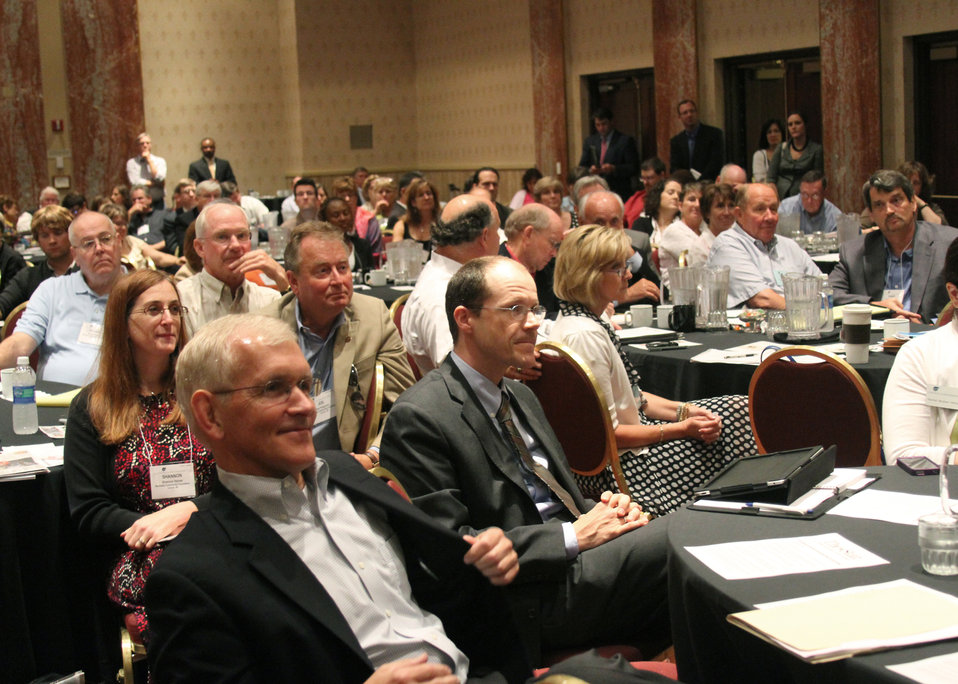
The theme of the 2011 Rural Philanthropy Conference is “Innovate, Implement, Impact.” The nation’s top innovative philanthropic leaders convened in Kansas City, MO, from July 25-27, 2011. The conference provided foundation leaders with the tools and knowledge required to capture new resources, engage in the arena of public policy, and address the unique challenges of rural economies. Agriculture Secretary Tom Vilsack gave the closing speech at the 2011 Rural Philanthropy Conference held at the Marriott in Kansas City, MO on Wednesday, July 27, 2011.